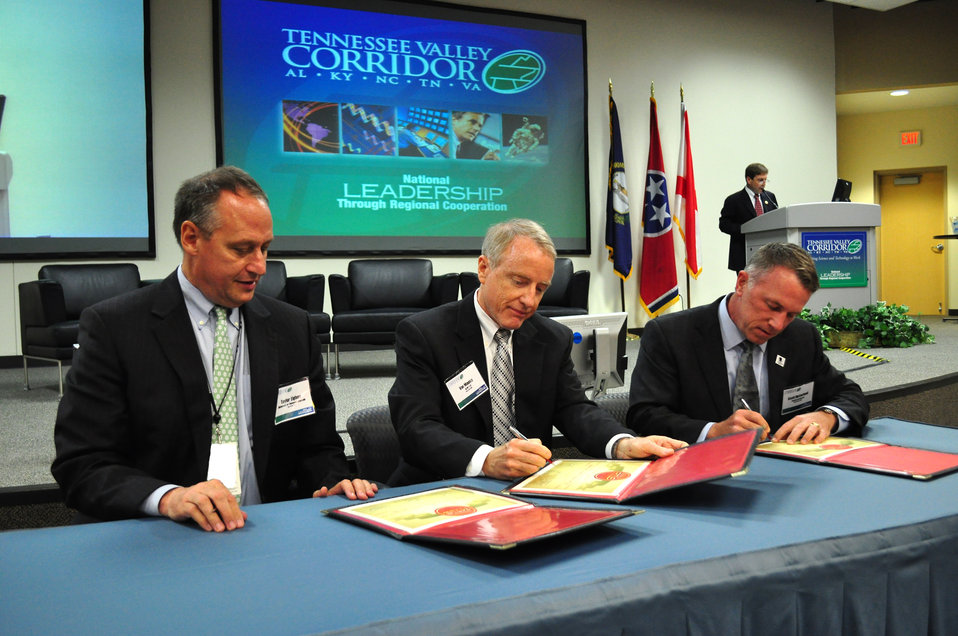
Tennessee Valley Corridor 2013 Oak Ridge

13-062 DOE photo Lynn Freeny 5-29-2013 Oak Ridge Tennessee